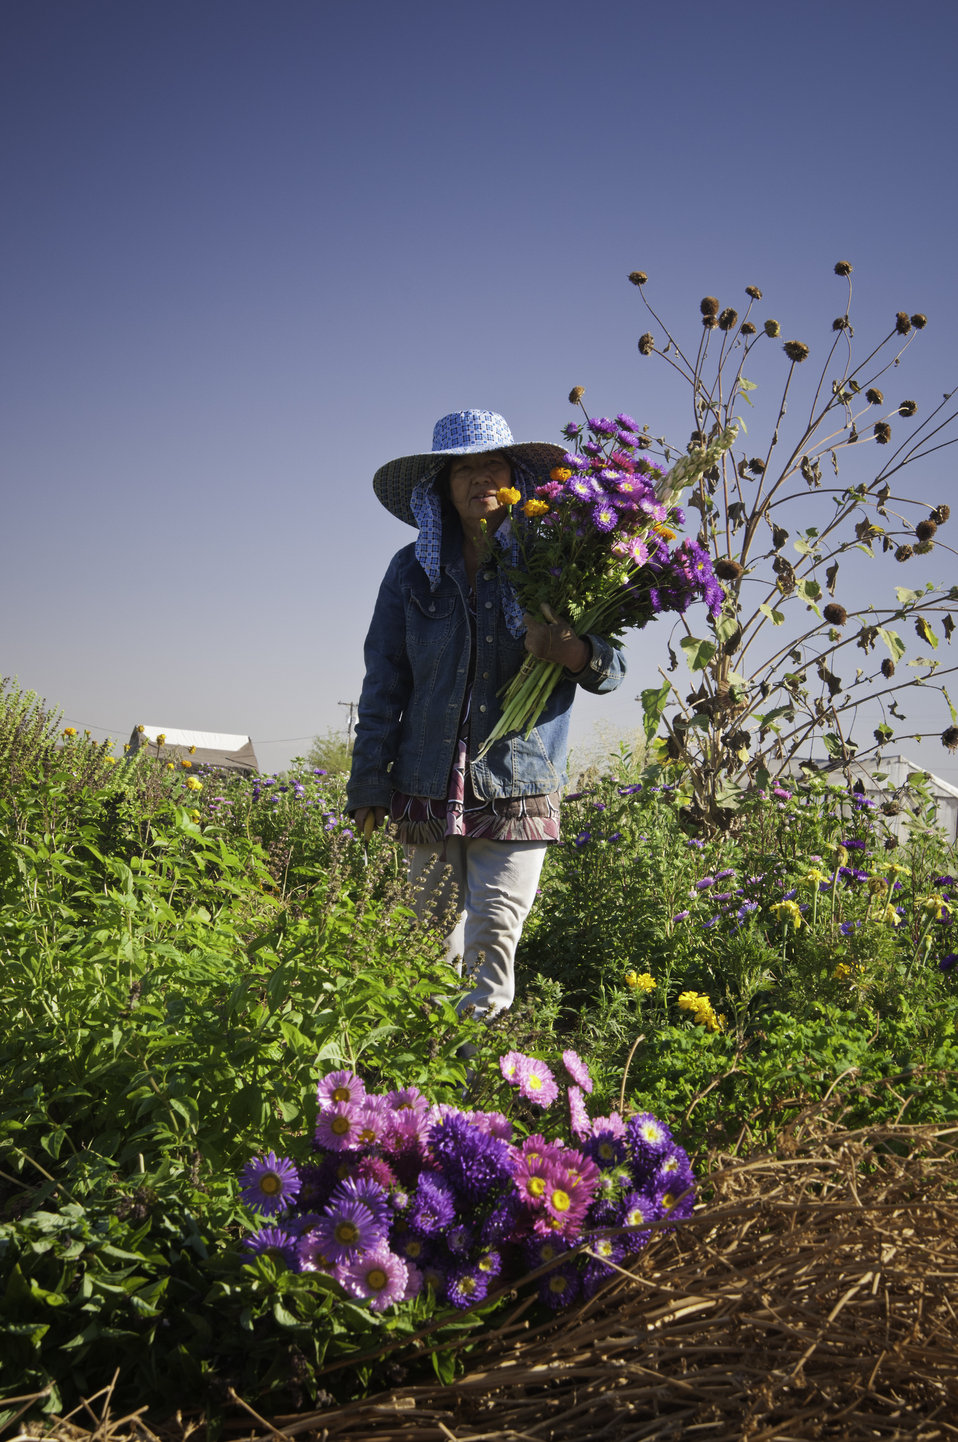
May Young Vu a Hmong farmer harvesting flowers on her farm May's Flower's in Sanger, California May Young Vu a Moung farmer taking opo squash harvested in the morning on her farm May's Flower's in Sanger, California to be packed for the farmers market in the afternoon on Thursday, August 29, 2013.